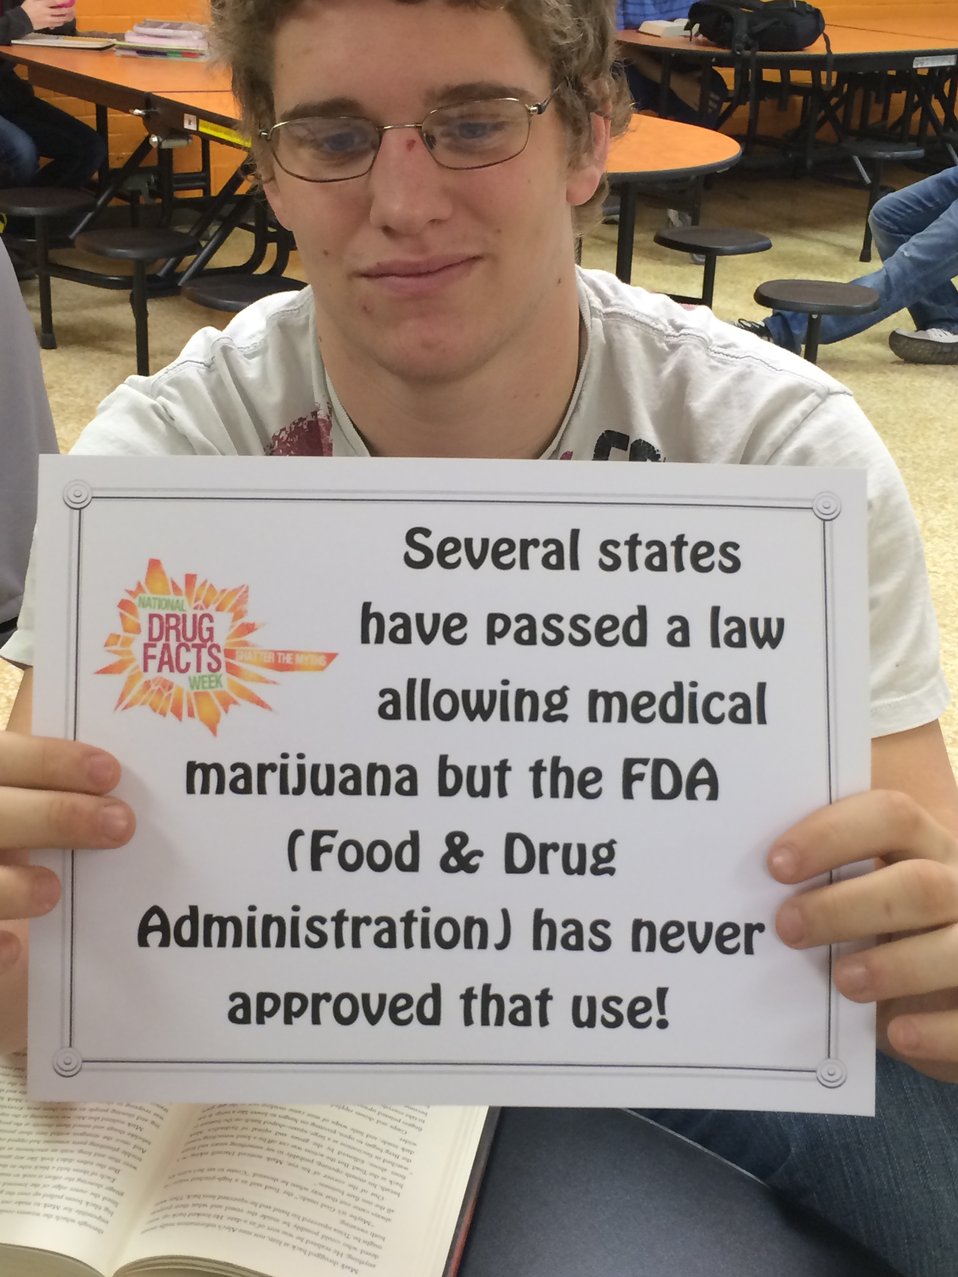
Sharing the Facts

Teenagers from the Van Buren County SAFE Coalition's, Youth Leadership Council (YLC) in Keosauqua, Iowa participate in various events during National Drug Facts Week, 2014.